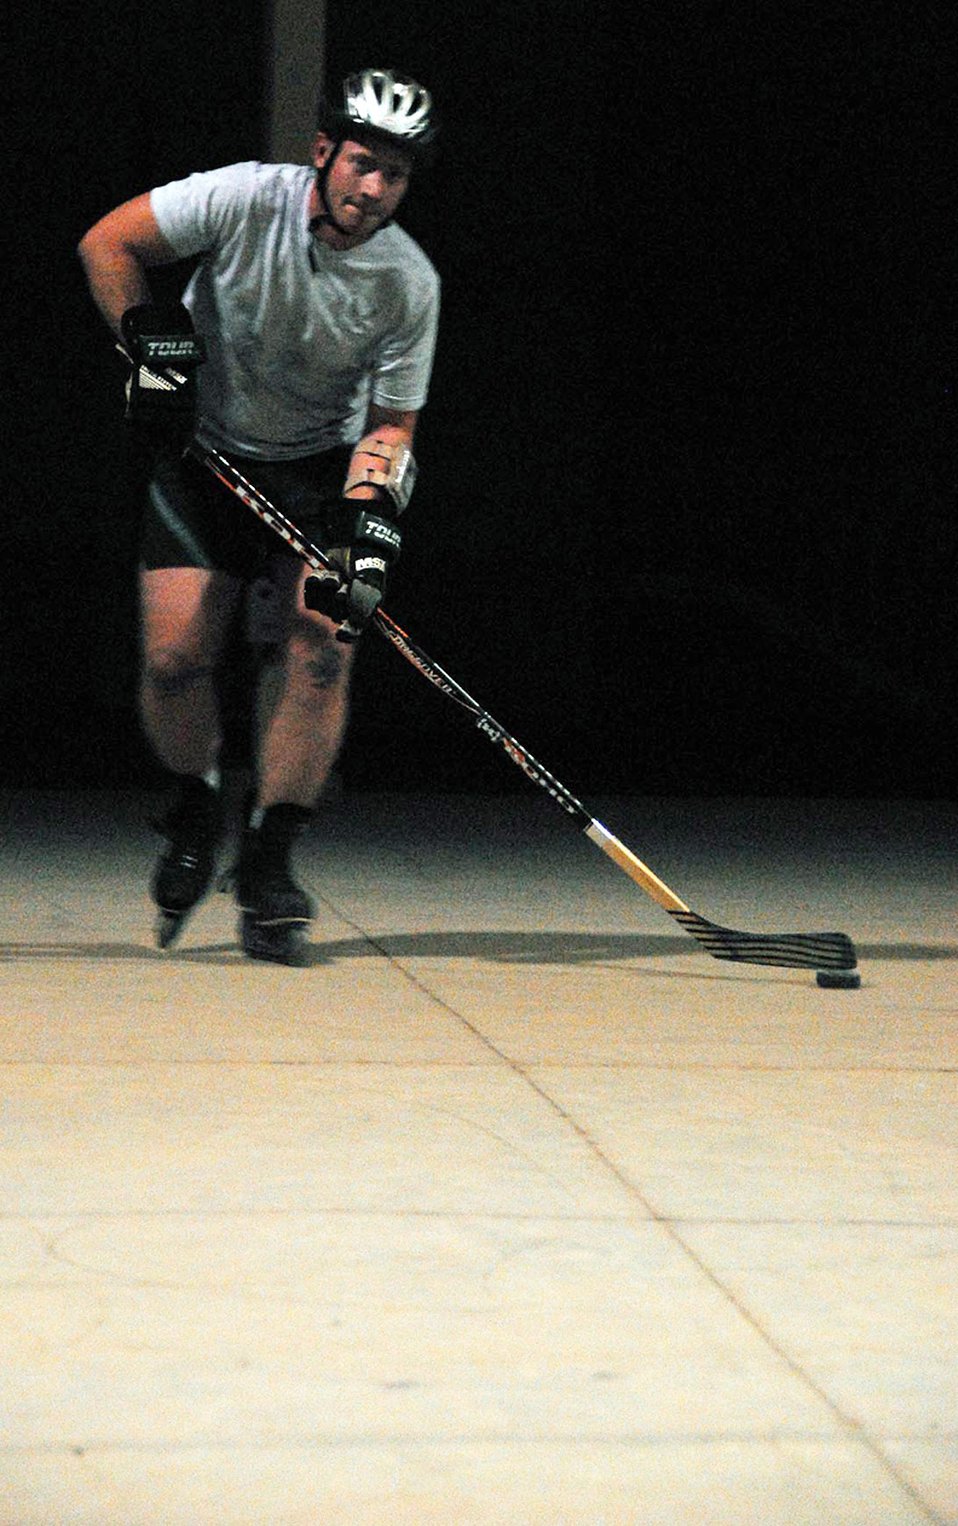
Airman finds peace in desert playing hockey

After working a 12-hour shift, Tech. Sgt. Wayland J. Baker is ready to hit the